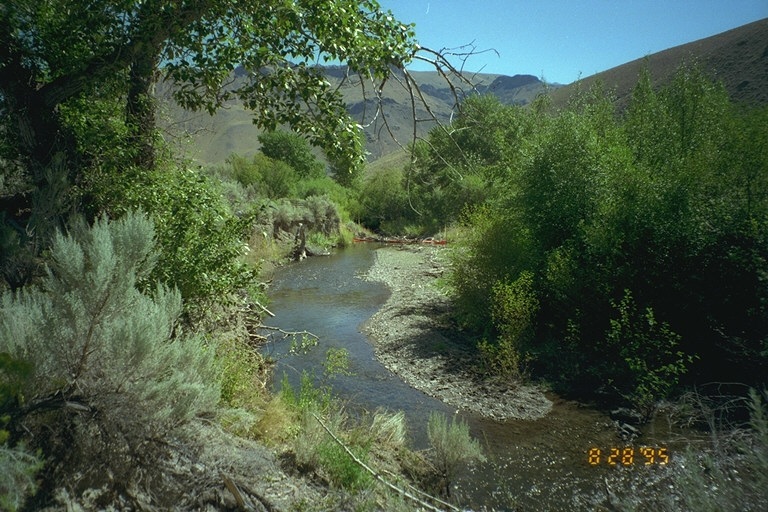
Riparian area Public Lands Salmon Field Office UCSC Upper Columbia Salmon Clearwater District